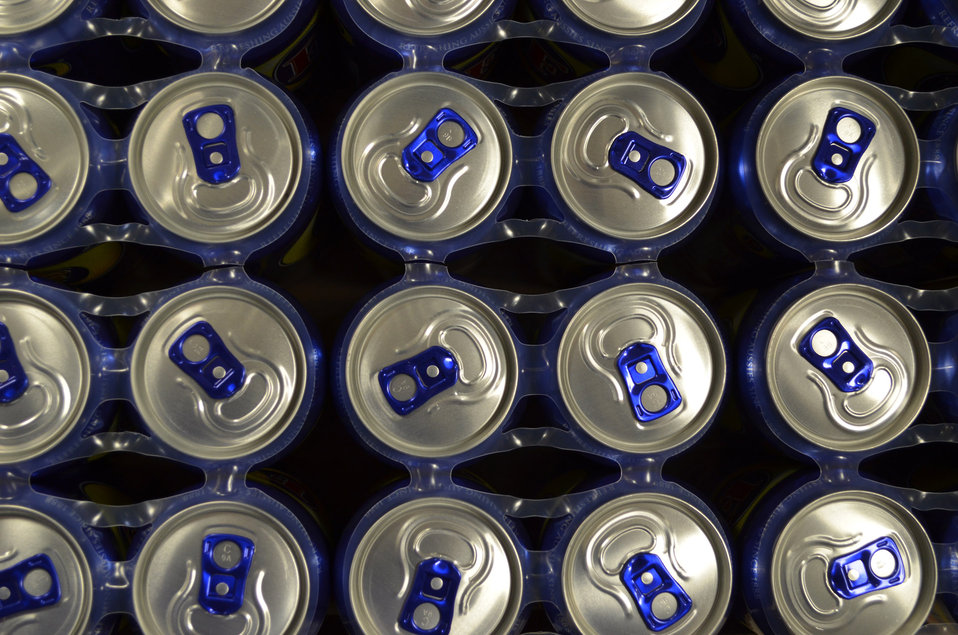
Cans background.